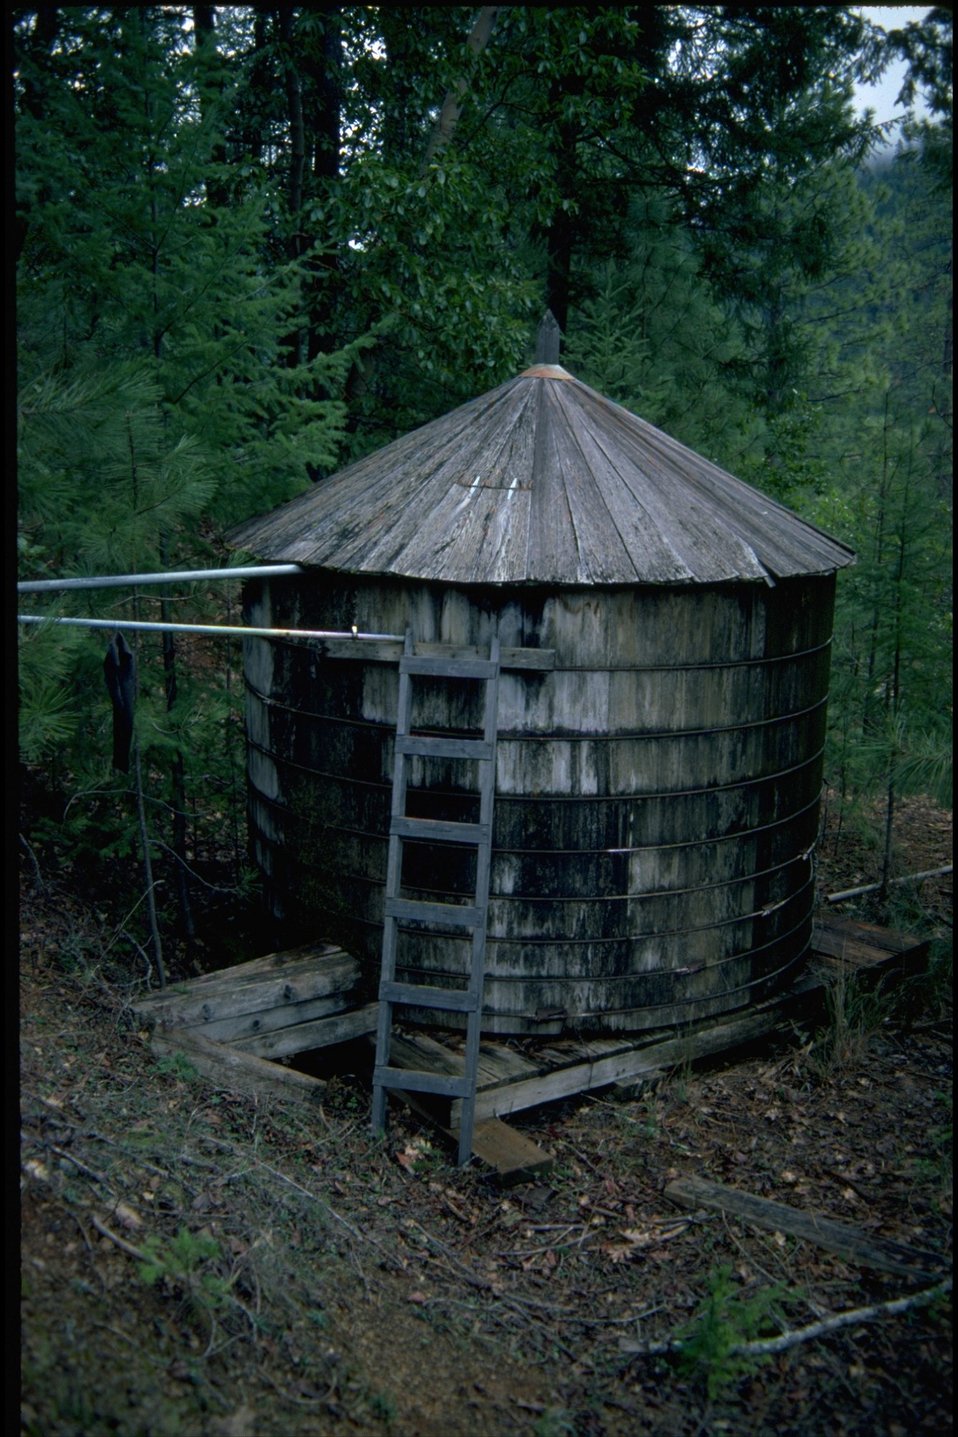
Rogue River - Rand, Water Tank.